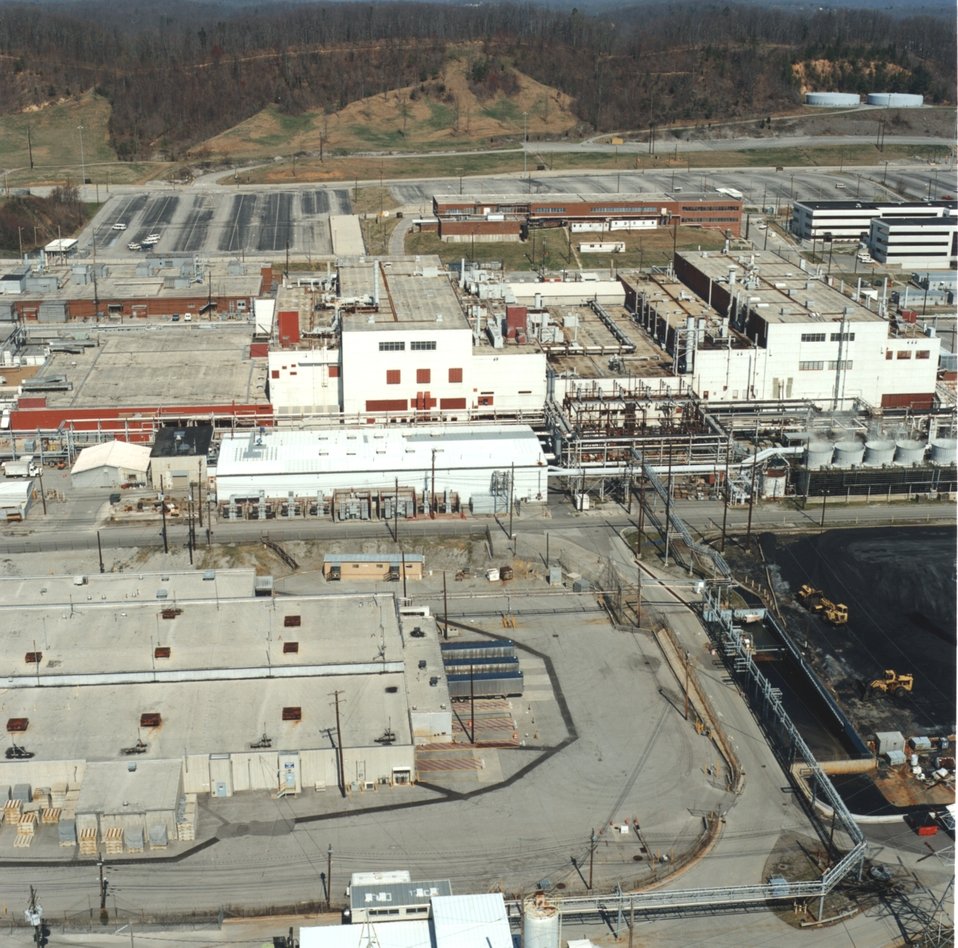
Workers Complete Y-12’s Largest Recovery Act Project Ahead of Schedule

The Y-12 National Security Complex (Y-12)
celebrated the early completion of its largest Recovery Act funded project, emptying all legacy material from Alpha 5. The cleanout of the 613,000-square-foot facility was completed at a cost of about $100 million one month ahead of schedule. Built in 1944, Alpha 5 is the largest building at Y-12, and was formerly used for uranium separation activities.